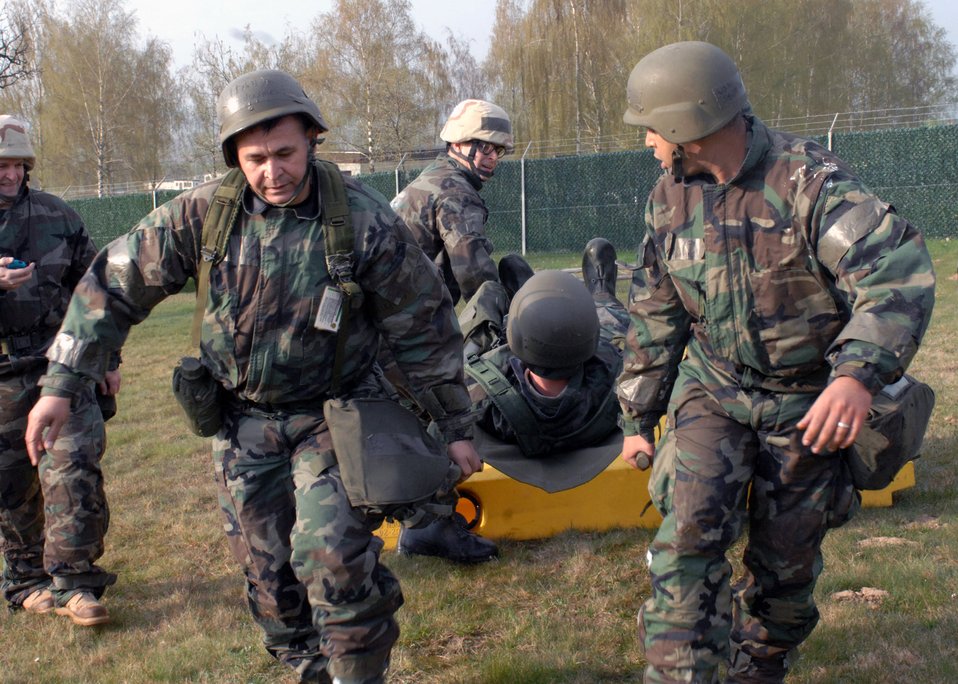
Operation Saber Crown 08-06 -- Ready to save lives, defend the base

Airmen from the 52nd Civil Engineer Squadron participate in a maneuver through an obstacle course at the ability to survive and operate rodeo during Operation Saber Crown 08-06 April 23. Airmen from every civil engineer career field joined together to compete in various events including unexploded ordnance identification, self aid and buddy care, mission operations protective posture level gear ups and weapons training.